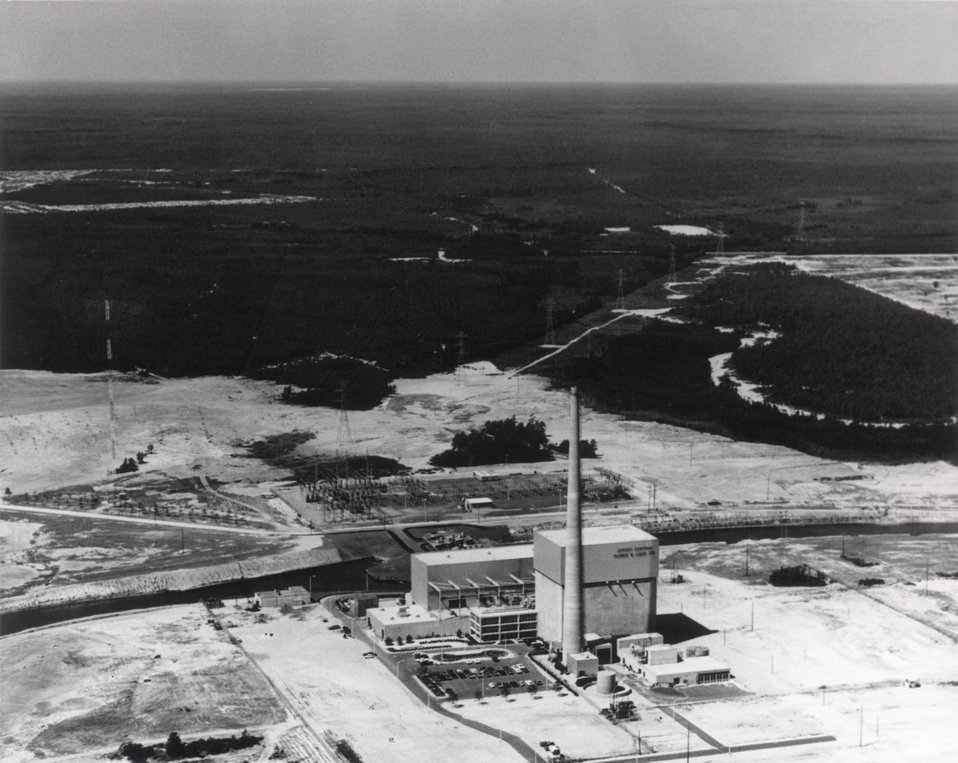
Oyster Creek Nuclear Power Plant Unit 1, Toms River, New Jersey. Circa 1971.